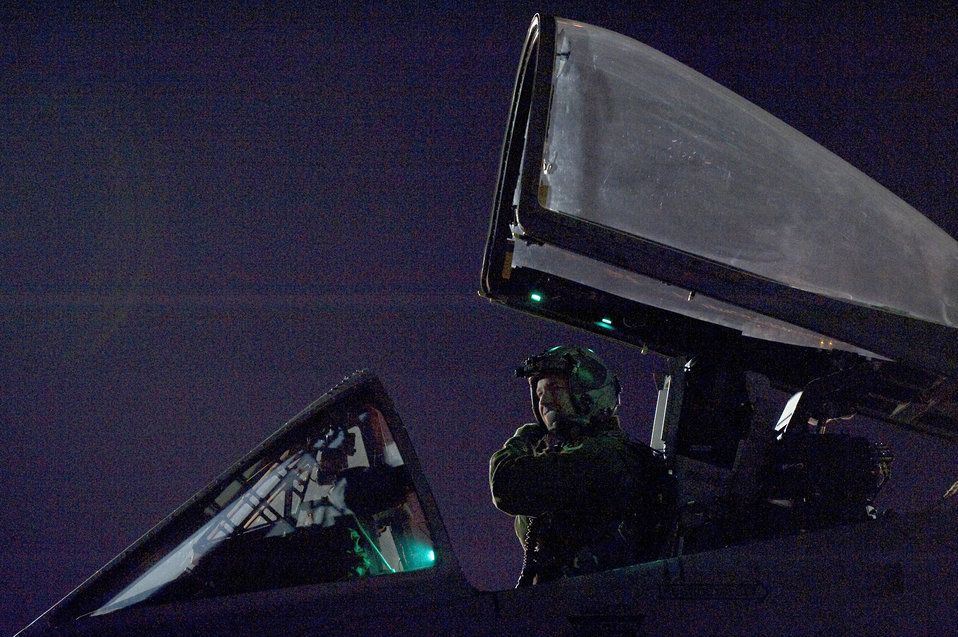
Red Flag 11-3

Maj. Eric Nodland buttons up his flight helmet in the cockpit of an A-10 Thunderbolt II before a training mission Feb. 24, 2011, during exercise Red Flag at Nellis Air Force Base, Nev. Major Nodland is a pilot assigned to the Michigan Air National Guard?s 107th Fighter Squadron.